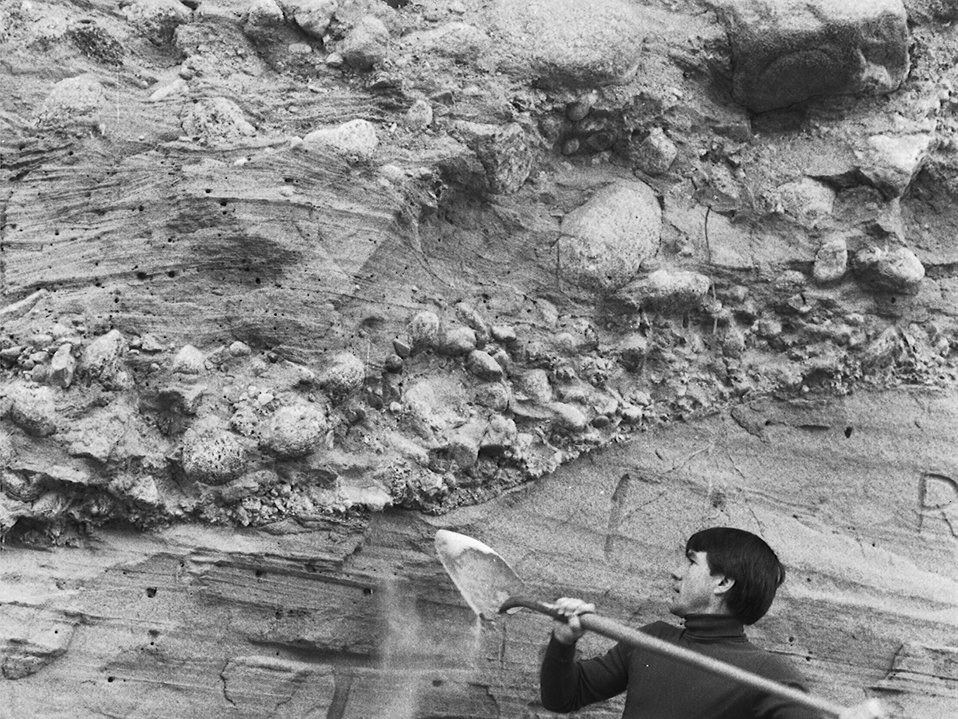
Lower Salmon Canyon Cottonwood Field Office UCSC Upper Columbia Salmon Clearwater District